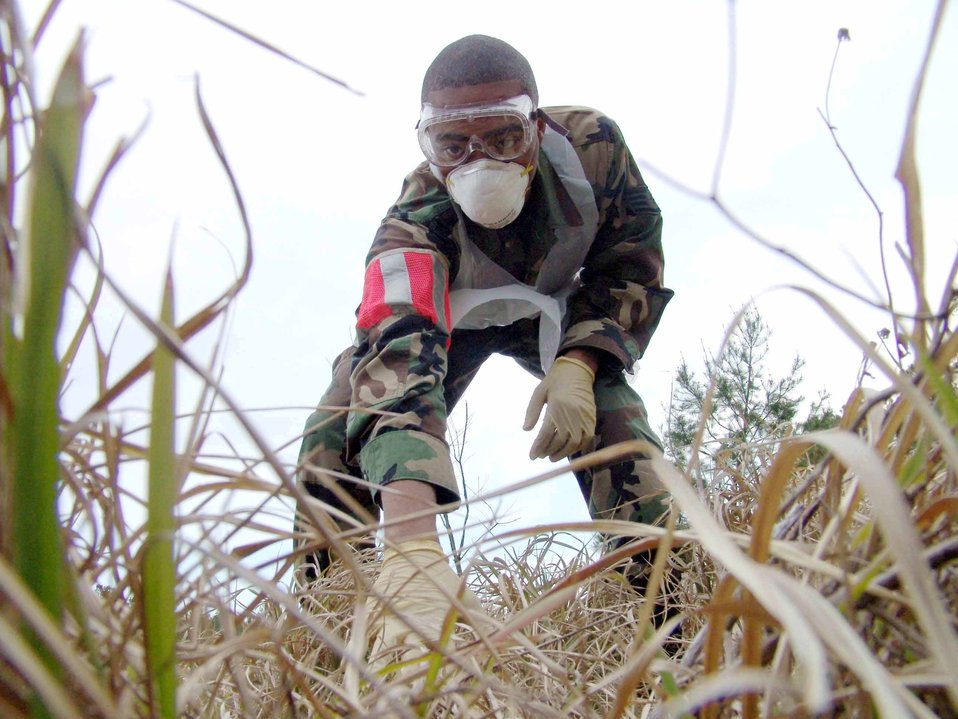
SAR teams pay close attention to detail

EGLIN AIR FORCE BASE, Fla. -- Staff Sgt. Thomas Johnakin looks through tall grass while training with a search and recovery team here. The team is made up of at least 26 Airmen who scour a site to find anything out of place in the aftermath of an accident. Tall grass is only one of the many challenges that the team must deal with. Sergeant Thomas is assigned to the 33rd Maintenance Squadron.